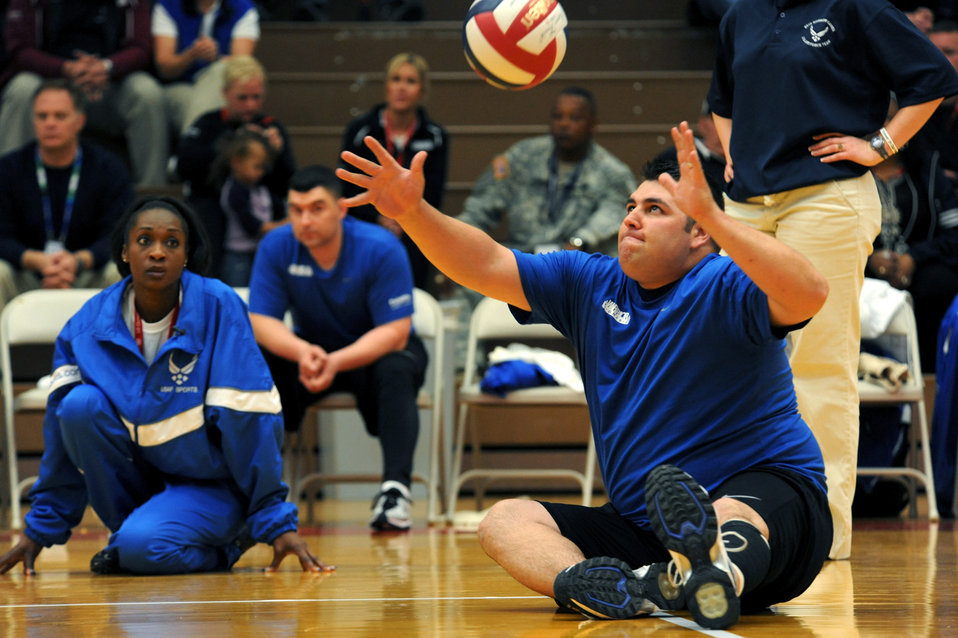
Warrior Games Volleyball

Air Force Warrior Games athlete, Ricky Tackett, prepares to serve the ball during the Warrior Games sitting volleyball match against Army at the U.S. Olympic Training Center in Colorado Springs, Colo., May 13, 2010.